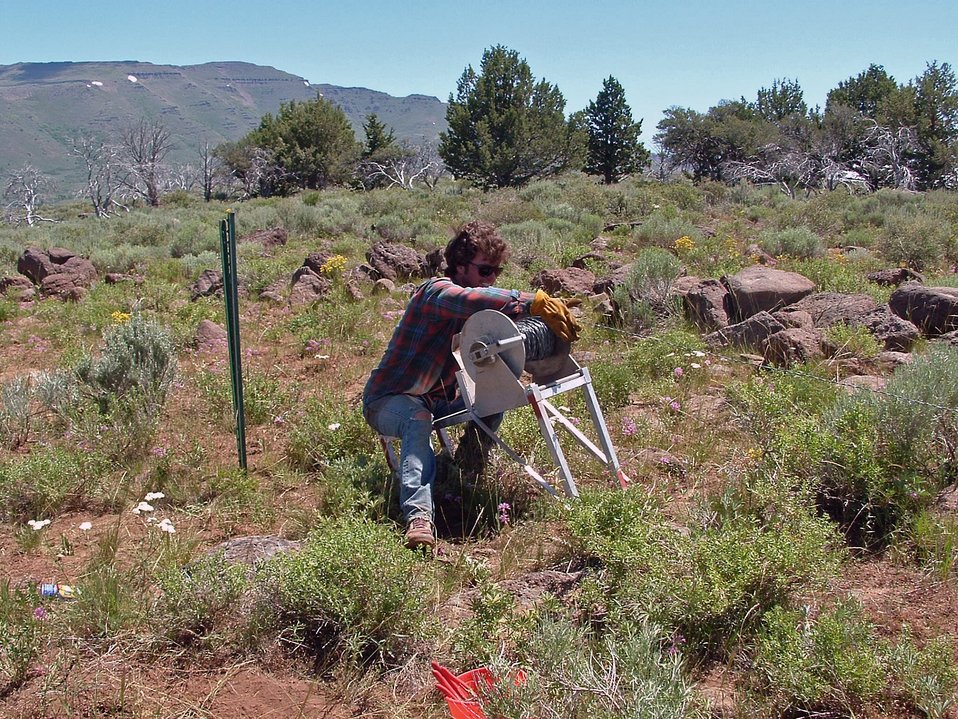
Volunteers work with BLM to remove over a 100 miles of old fence.